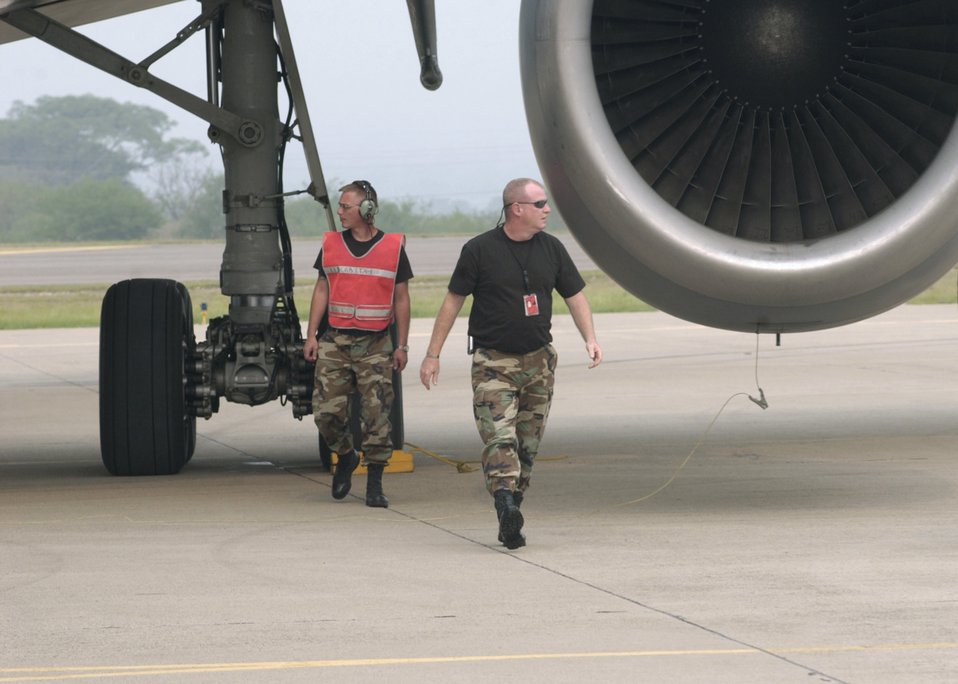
Airmen keep Soto Cano's runway running

SOTO CANO AIR BASE, Honduras -- Staff Sgt. Karal Schofield (left) and Tech Sgt. Michael McCarthy, transient alert technicians, check a KC-10 Extender from Charleston Air Force Base, S.C. The huge tanker flies the weekly flight from Charleston, which brings in new Airmen here.